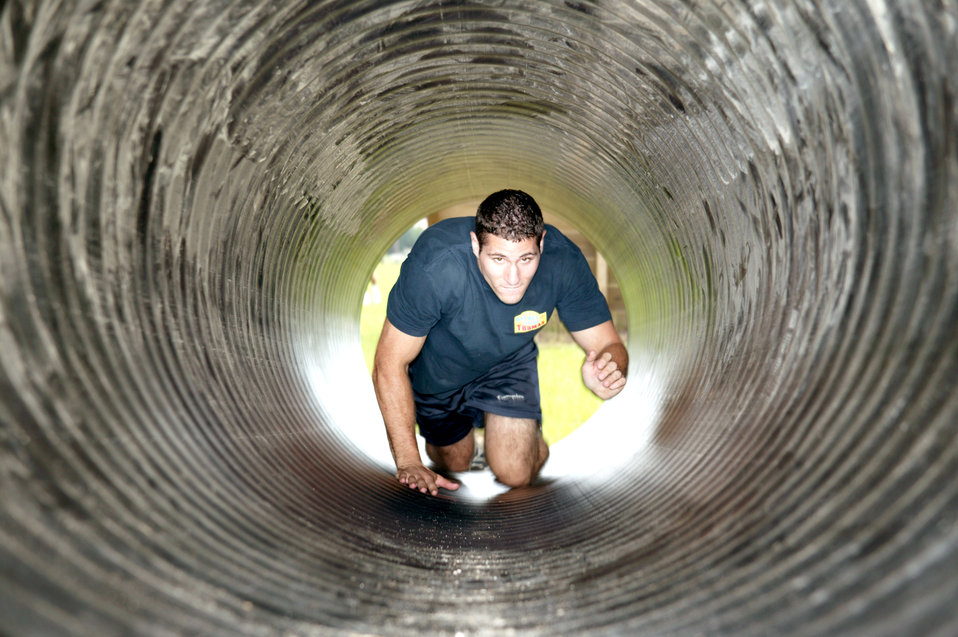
One obstacle at a time

SHAW AIR FORCE BASE, S.C. -- Second Lt. Joshua Meister crawls through a tunnel on a new obstacle course here July 5. The course was developed by the 28th Operational Weather Squadron to promote fitness and fun in a safe team atmosphere. More than 500 hours and $6,000 were spent on the self-help project.